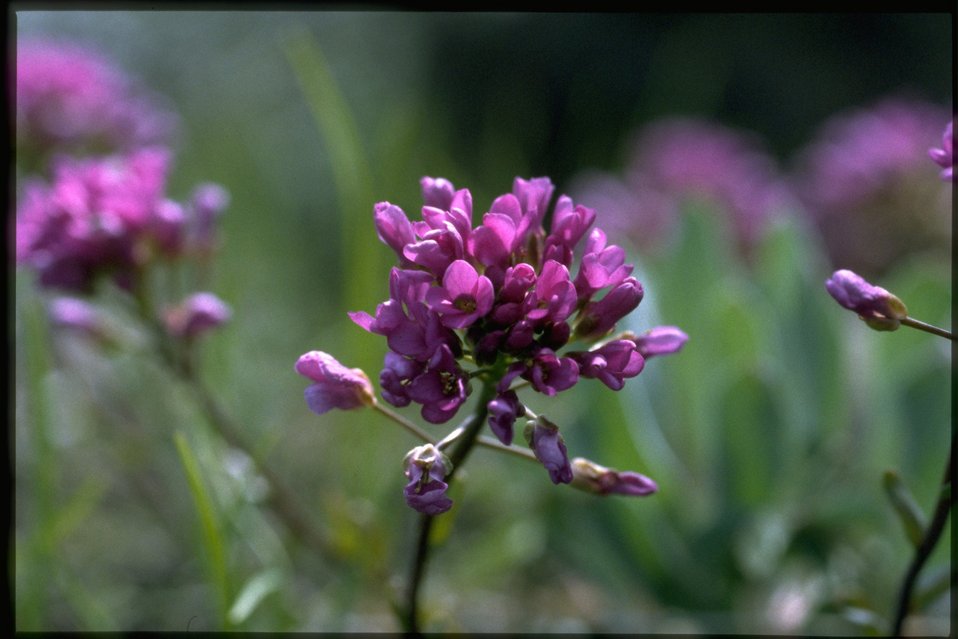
Closeup shot of daggerpod, Phoenicaulis Cheiranthoides, wildflowers.